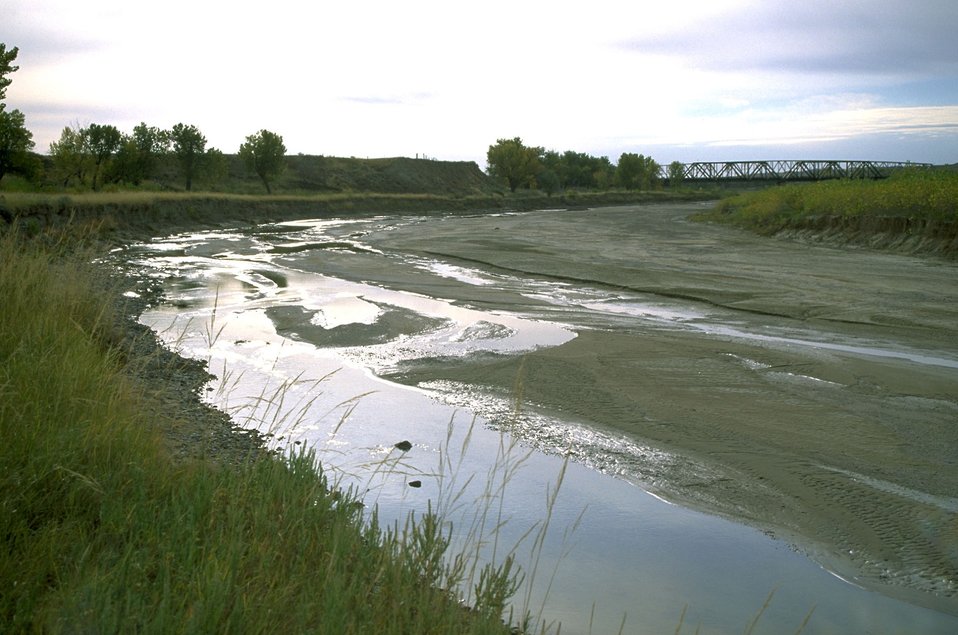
Shallow portion of the Powder River with train bridge to the right